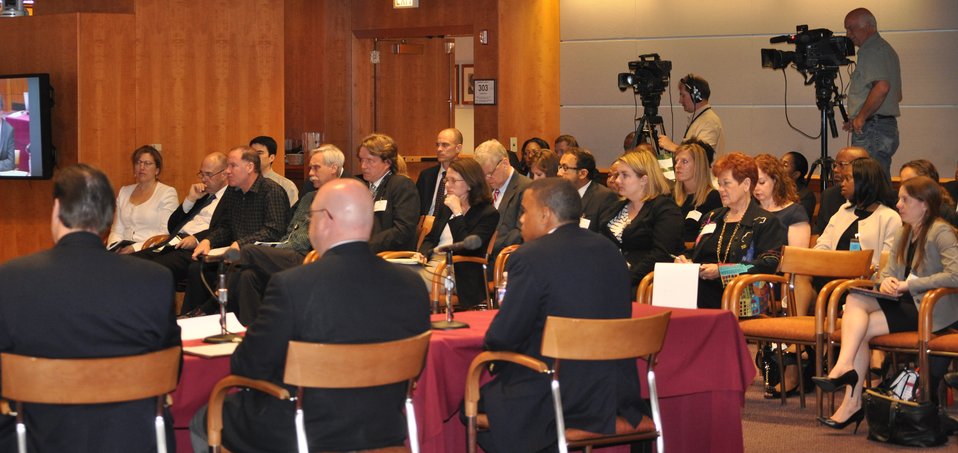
Cybersecurity 5-16

Cybersecurity for Small Business Roundtable; May 16, 2011